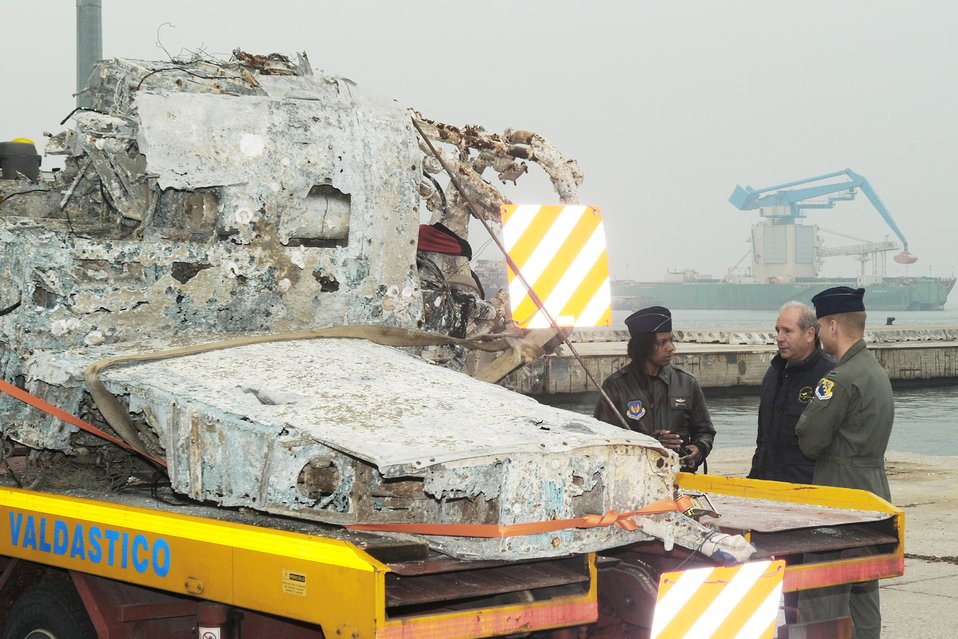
WWWII Army Air Force fighter

Maj. Shawna Kimbrell and 1st Lt. Justin Cleveland talk with Italian aviation enthusiast Sergio Maron about the World War II Army Air Force fighter wreckage found in the Adriatic Sea during a ceremony Nov. 14, 2009, at the Chioggia Lagoon in Italy. The wreckage, believed to be a P-47 Thunderbolt that crashed into the Adriatic in the mid-1940s, was recovered during a fishing expedition in May 2009. Major Kimbrell and Lieutenant Cleveland are F-16 Fighting Falcon pilots from Aviano Air Base, Italy.